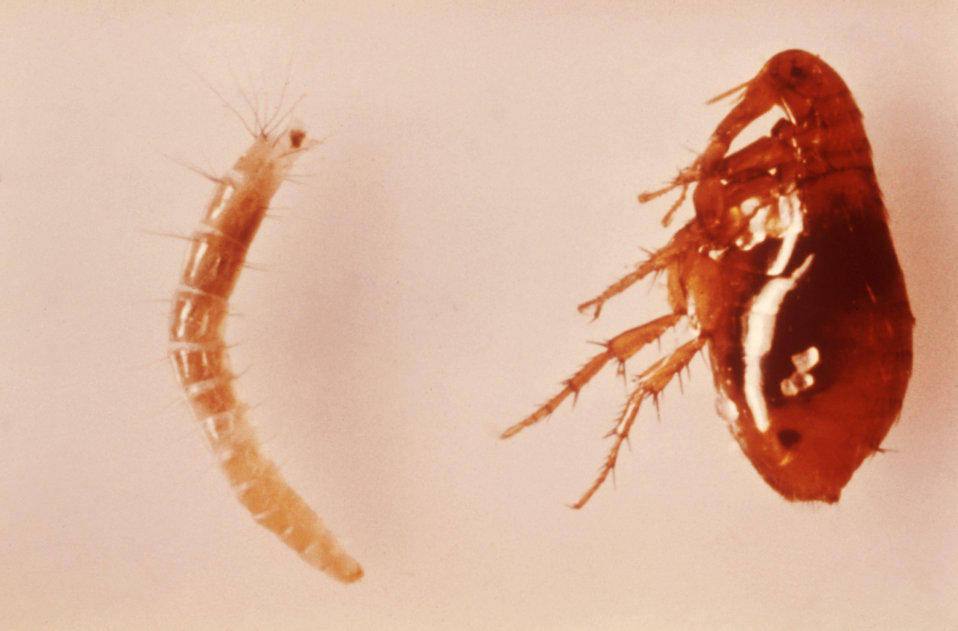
Shown here is a larva (left), and an adult female (right) of the oriental rat flea, Xenopsylla cheopis.